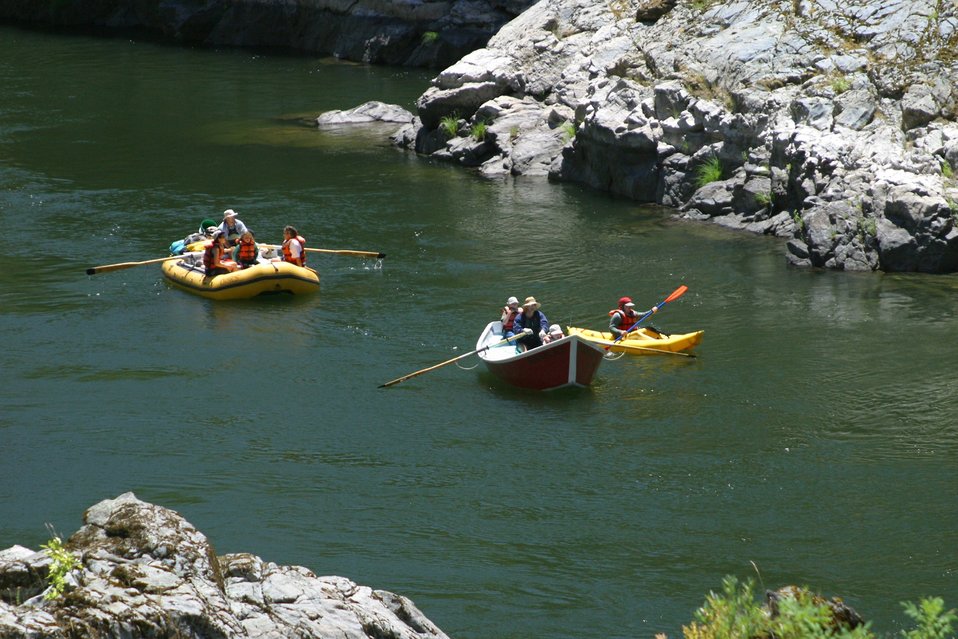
Boaters above Blossom Rapids.